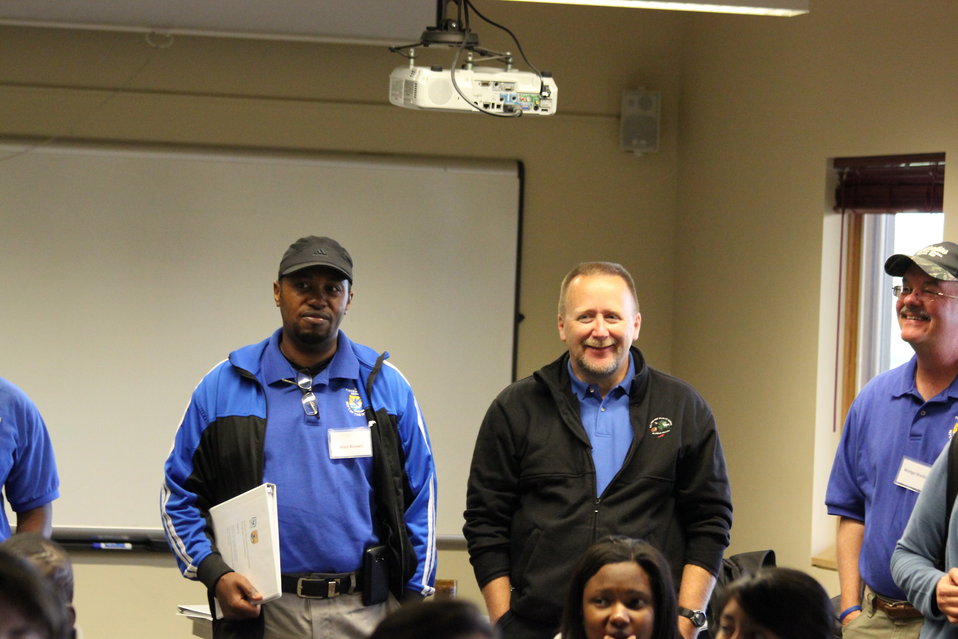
CDIP 2012 Fergus Falls

Wes, Doug and Wedge